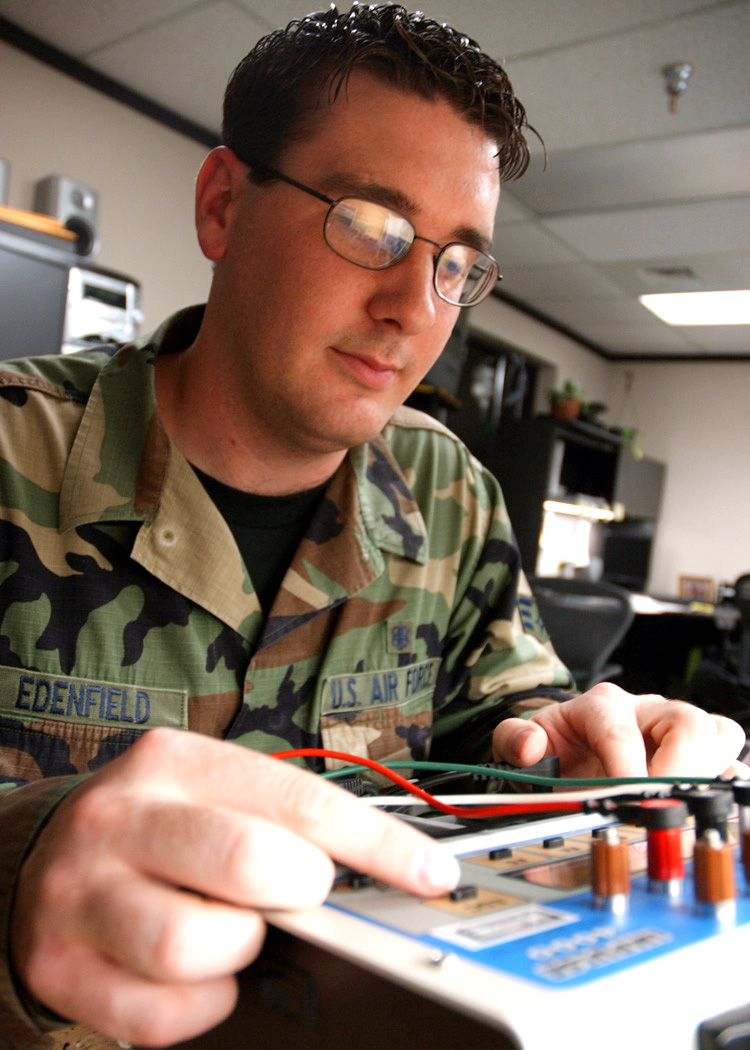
Running some tests

EIELSON AIR FORCE BASE, Alaska -- Senior Airman Nathan Edenfield tests outputs which attach to a body to guage its electrocardiogram. An electrocardiogram is an electrical reading of the heart to help diagnose heart disease. Airman Edenfield is a medical equipment repair technician with the 354th Medical Support Squadron here.